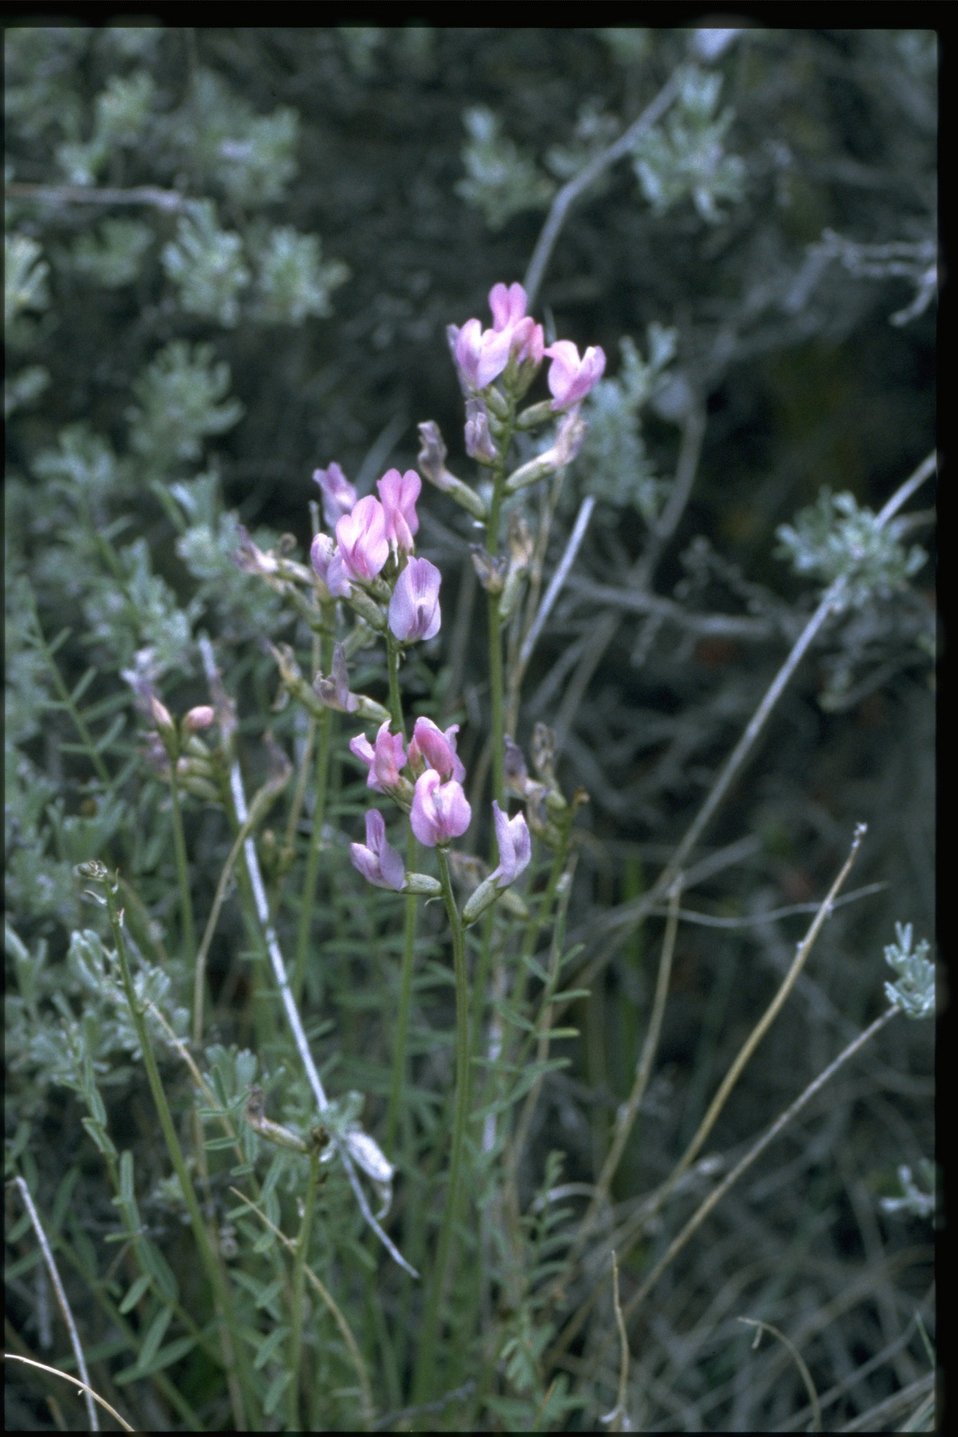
Medium shot of Idaho Milkvetch (Astragalus conjunctus).